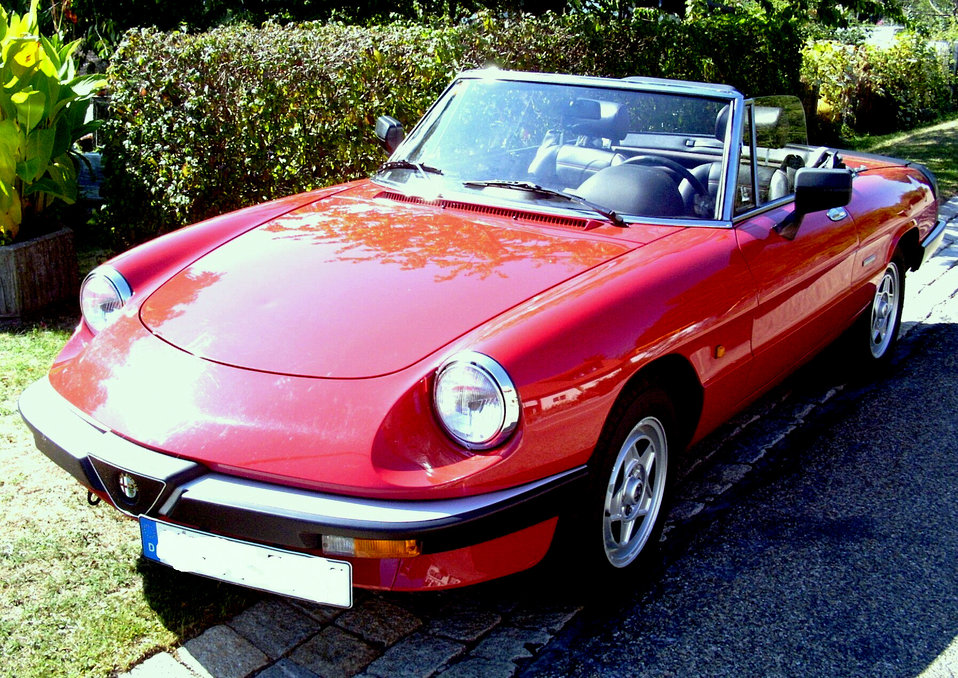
mein Alfa Spider Baujahr 1989